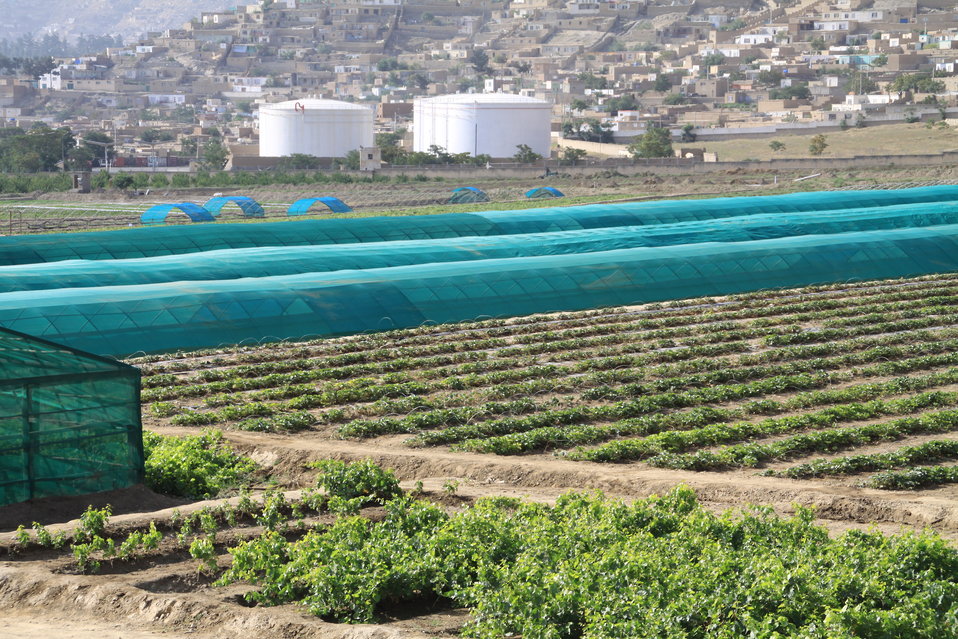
Badam Bagh Farm